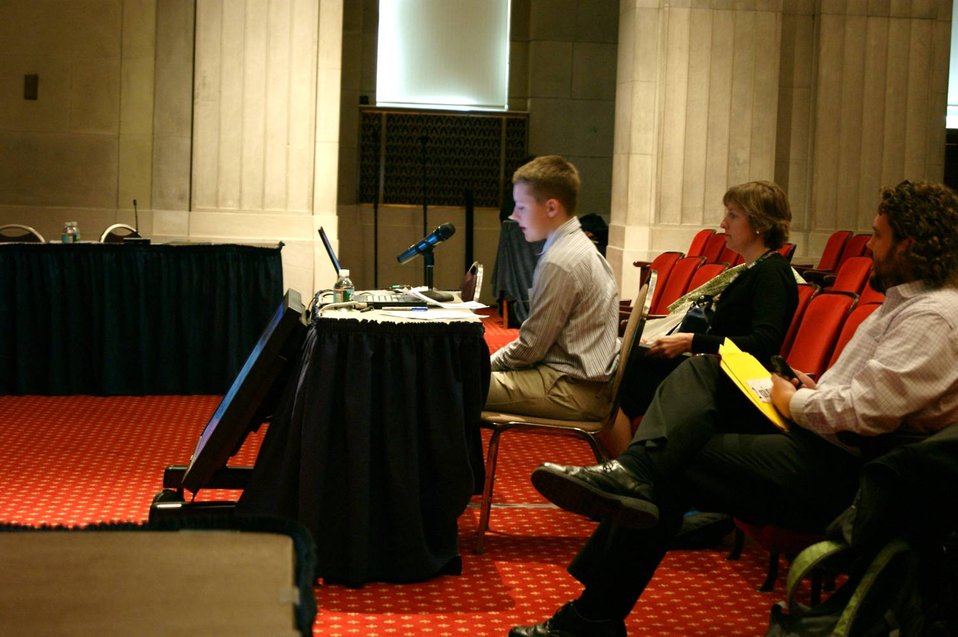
Coral Reef Task Force - Winter Meeting 2012